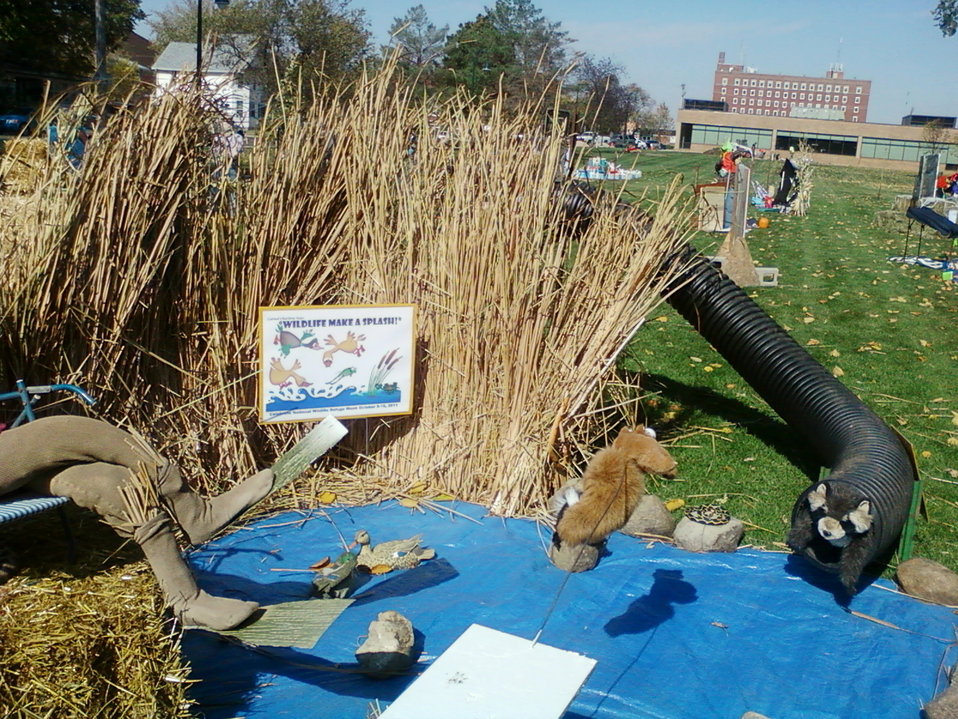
2011 Scarecrow Contest Huron,SD